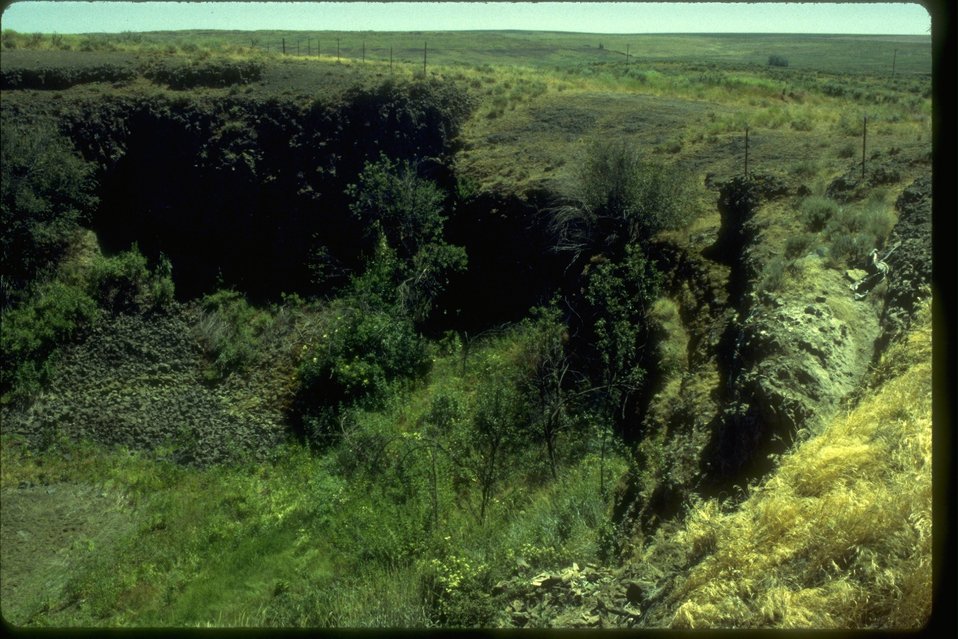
Cache Crater, a geologic formation in the Cahnneled Scablands of Lincoln County, Washington